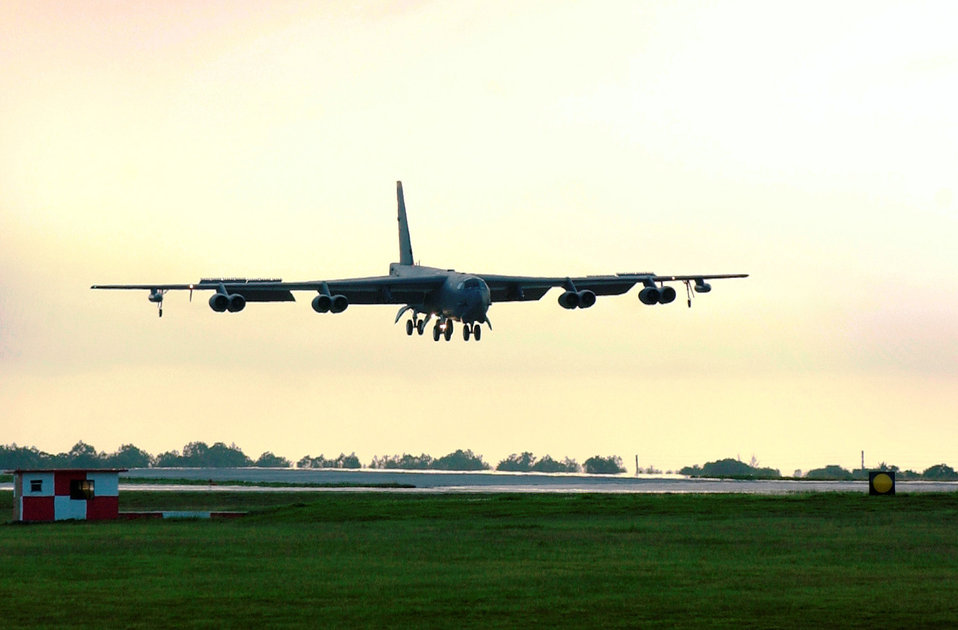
B-52s arrive at Andersen

A 23rd Expeditionary Bomb Squadron B-52 Stratofortress prepares to land at Andersen Air Force Base, Guam, Aug. 30. The aircraft, from the 5th Bomb Wing at Minot AFB, N.D., is one of six scheduled to deploy to Andersen for four months. The aircraft, aircrews, support staff and maintainers will continue the mission of promoting regional security and preserving regional stability while providing a continuous bomber presence.